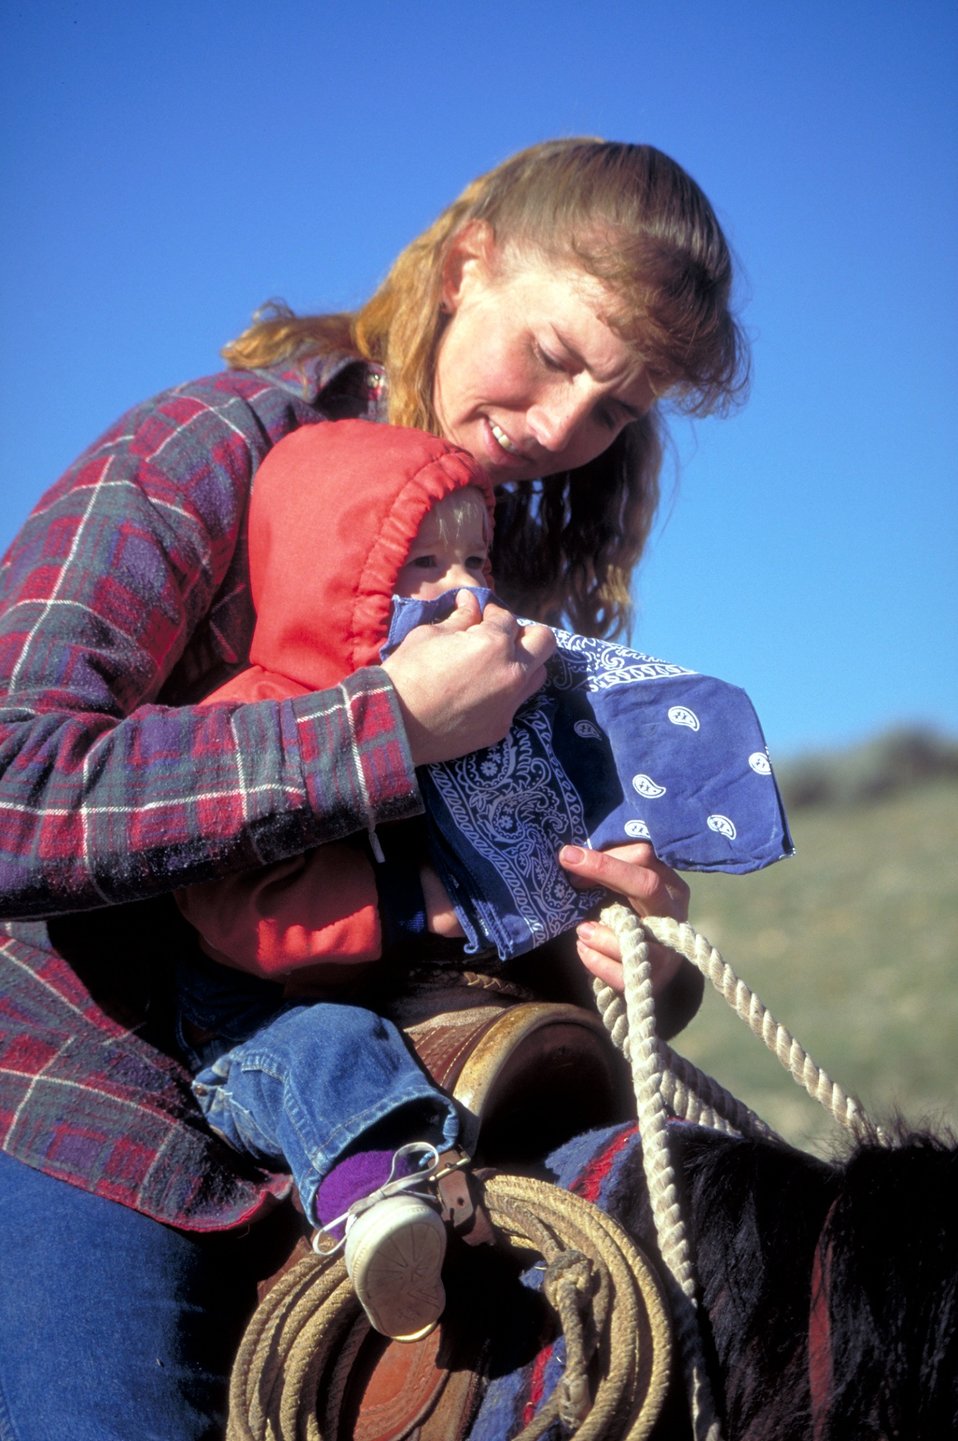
Working cowboys living near Vernal, Utah.